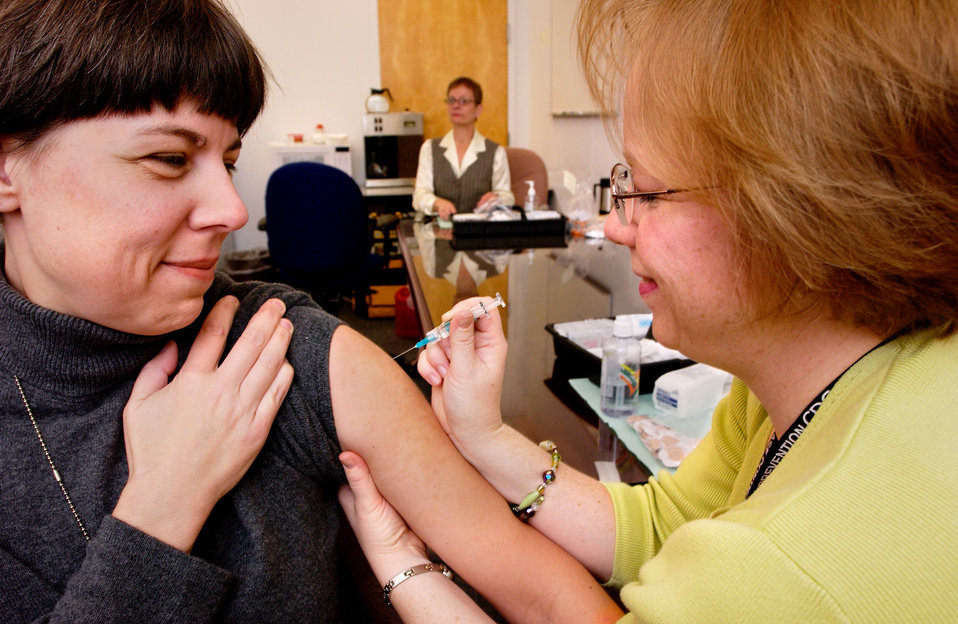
In the United States, the flu season can range from November through March, and even past March in some years.